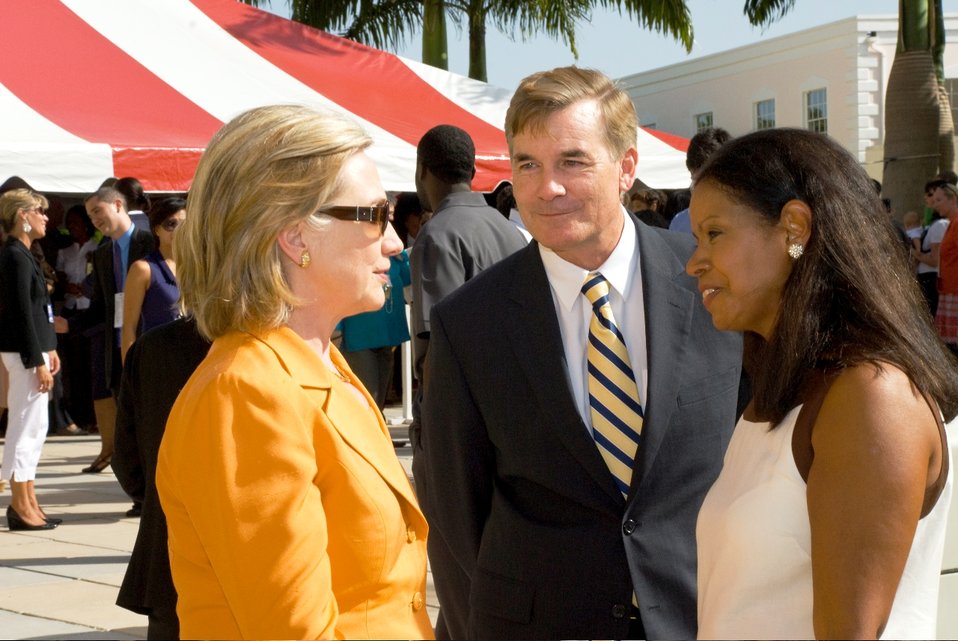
Secretary Clinton Meets With Chargé d’Affaires Dr. Brent and Saskia Hardt

U.S. Secretary of State Hillary Rodham Clinton meets with U.S. Embassy Barbados and Eastern Caribbean Chargé d’Affaires Dr. Brent Hardt and his wife, Saskia, at the U.S. Embassy Bridgetown in Barbados on June 10, 2010.